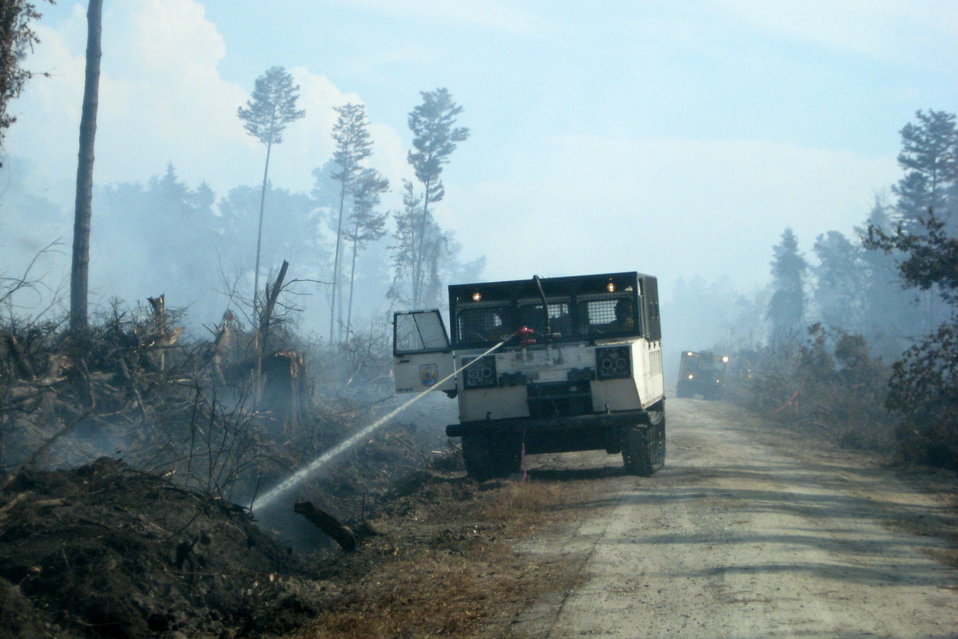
Swamp vehicle on Forest Line Road

Suffolk, VA, August 2011: A specialized low-ground pressure vehicle works to put out the Lateral West Fire in Great Dismal Swamp.